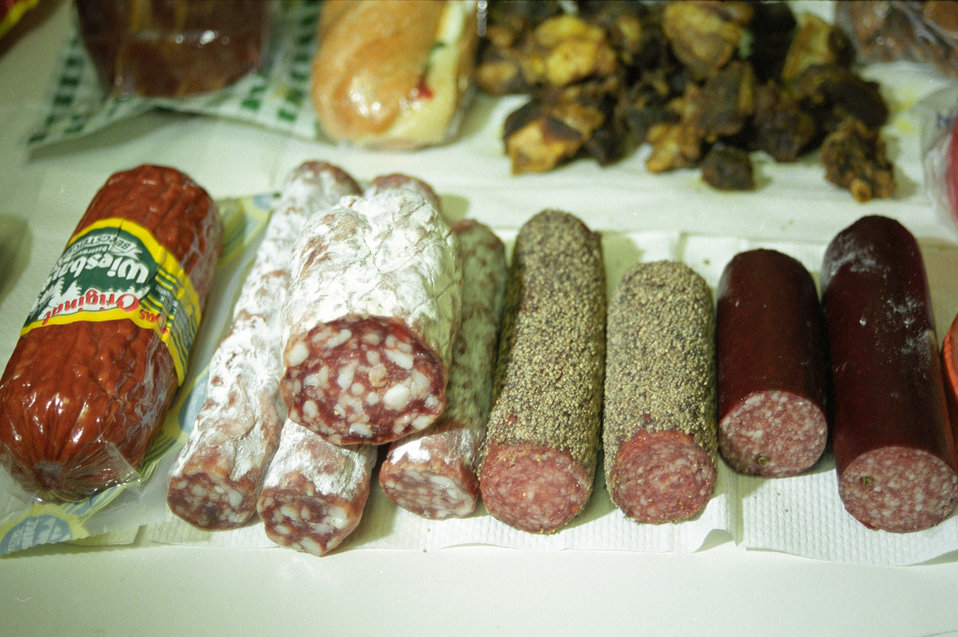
Food contraband intercepted at Washington Dulles International Airport in Chantilly, VA on March 14, 2001 is held for disposal at the airport. The food was concealed in passengers ‘luggage and located by a beagle from the Beagle Brigade. The Brigade is a team of beagles and their human handlers who, as part of the U.S. Department of Agriculture's (USDA) Animal and Plant Health Inspection Service (APHIS) inspect luggage at U.S. airports searching for agricultural products. The Beagle Brigade program averages around 75,000 seizures of prohibited agricultural products a year. Unauthorized meat, animal byproducts, fruit and vegetables can carry diseases and pests that have the potential to infect U.S. agriculture. APHIS works in conjunction with the U.S. Customs and Border Protection and the U.S. Public Health Service at entry points to the U.S., including land borders, ports and airports. The Beagle Brigade generally works in the baggage-claim area at international airports. After 911, the Beagle Brigade is under the authority of Homeland Security.